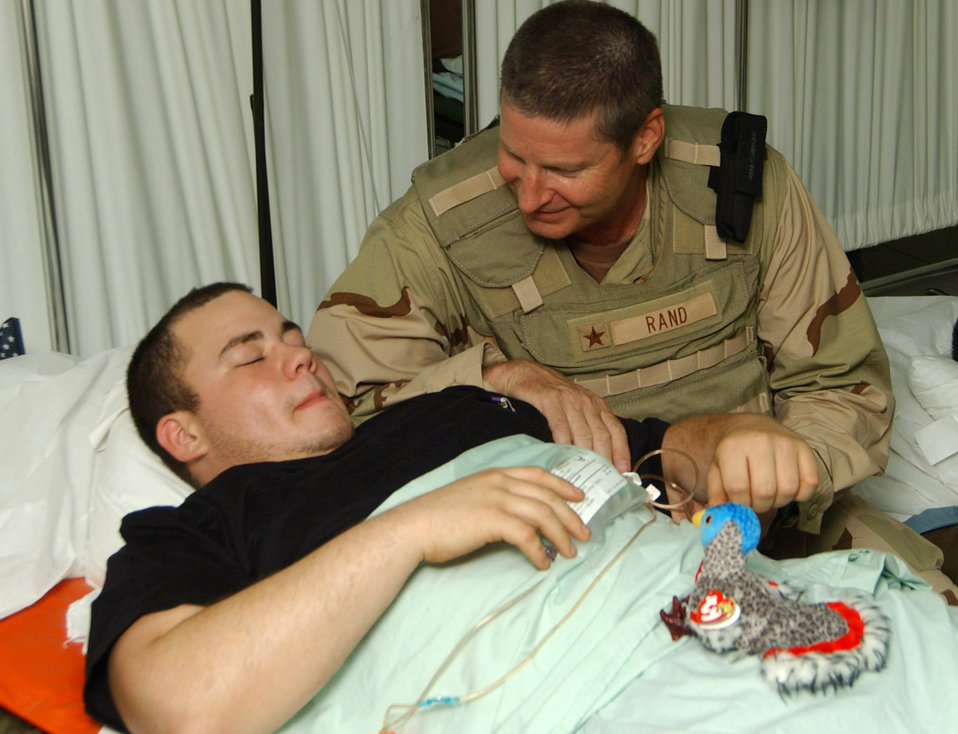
Life changes in a matter of seconds

Brig. Gen. Robin Rand talks with Airman 1st Class Joshua Collins after presenting him with the Purple Heart at Balad Air Base, Iraq, on July 20. Airman Collins was wounded by a roadside bomb while driving a convoy truck north of Balad. General Rand is commander of the 332nd Air Expeditionary Wing.